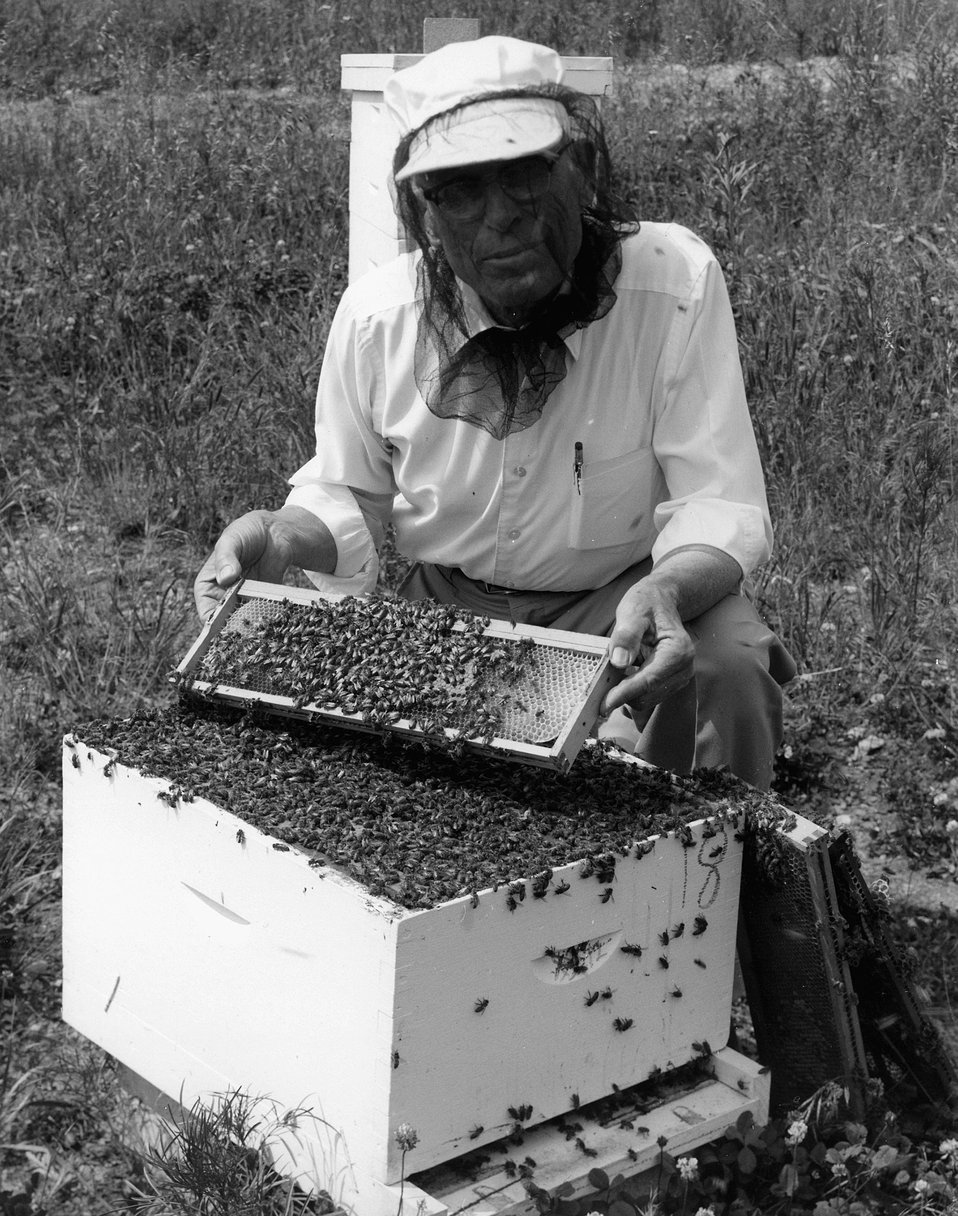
At the U.S. Atomic Energy Commission's Oak Ridge National Laboratory one ecology project centers around the study of radiation effects on an organized population, such as the bees in this photo. c. 1972